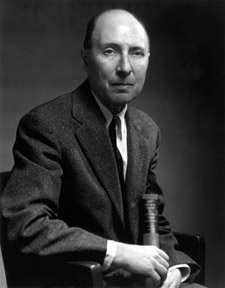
Eugene Wigner .